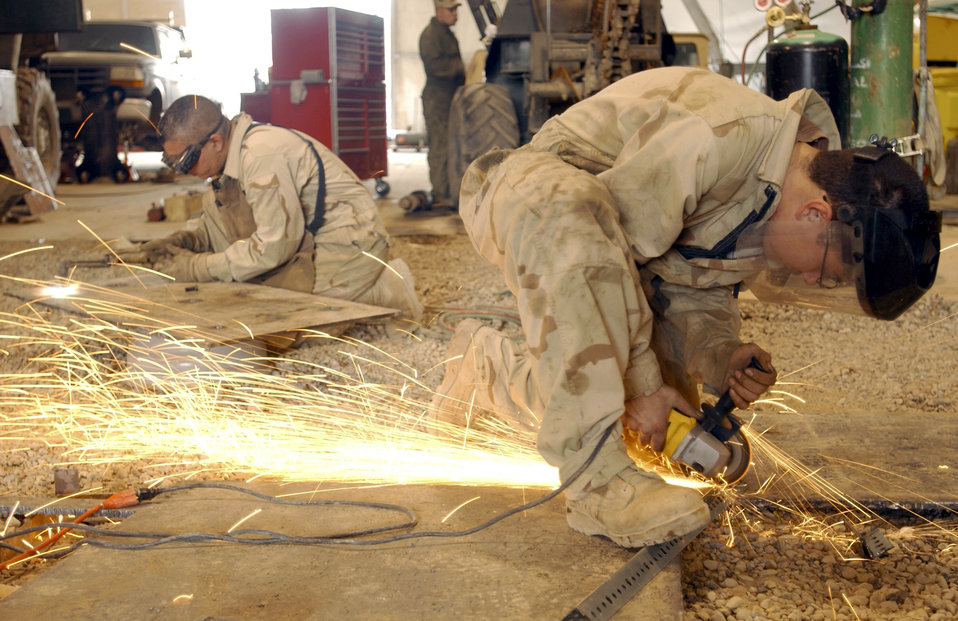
When sparks fly

BAGHDAD INTERNATIONAL AIRPORT, Iraq -- Staff Sgt. Michael Batres (left) and Airman 1st Class Michael Davis weld and cut steel plates for armor protection on a 5-ton truck Jan. 16. Both airmen are vehicle mechanics with the 447th Expeditionary Logistical Readiness Squadron here.